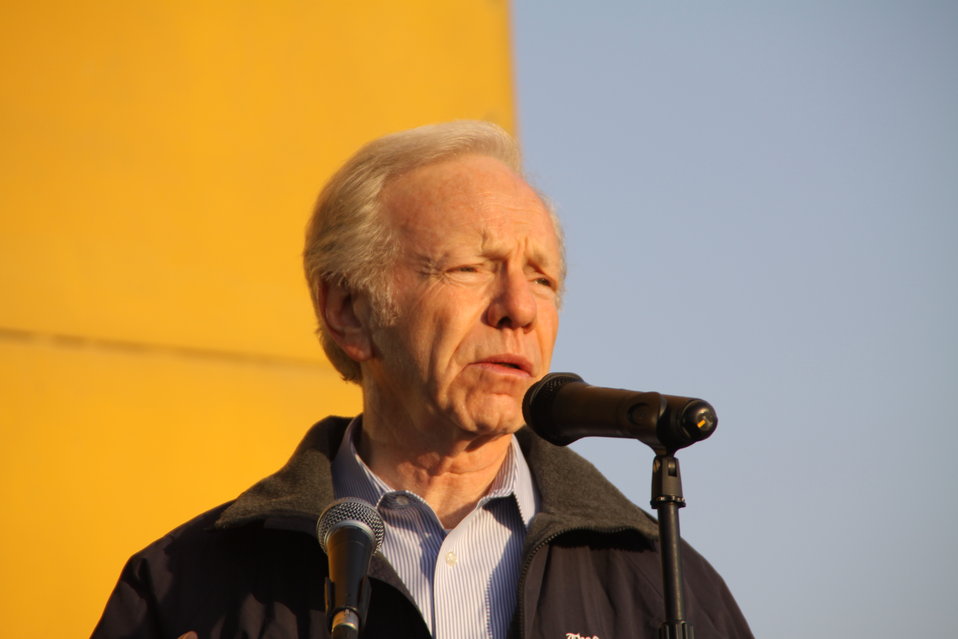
Senator Lieberman